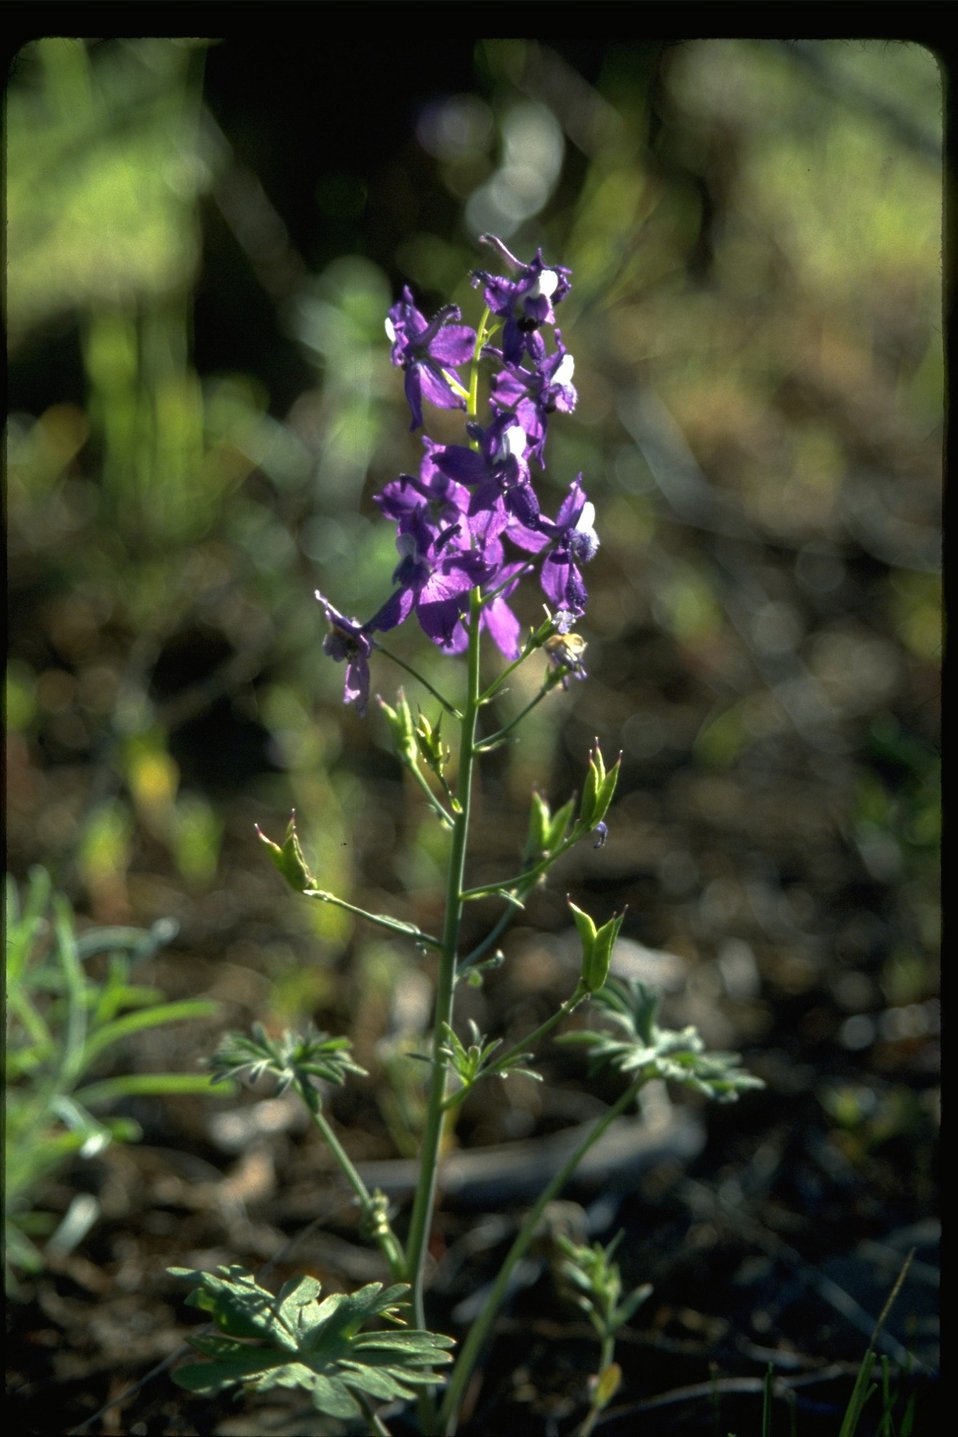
Backlight shot of delphinium/larkspur.